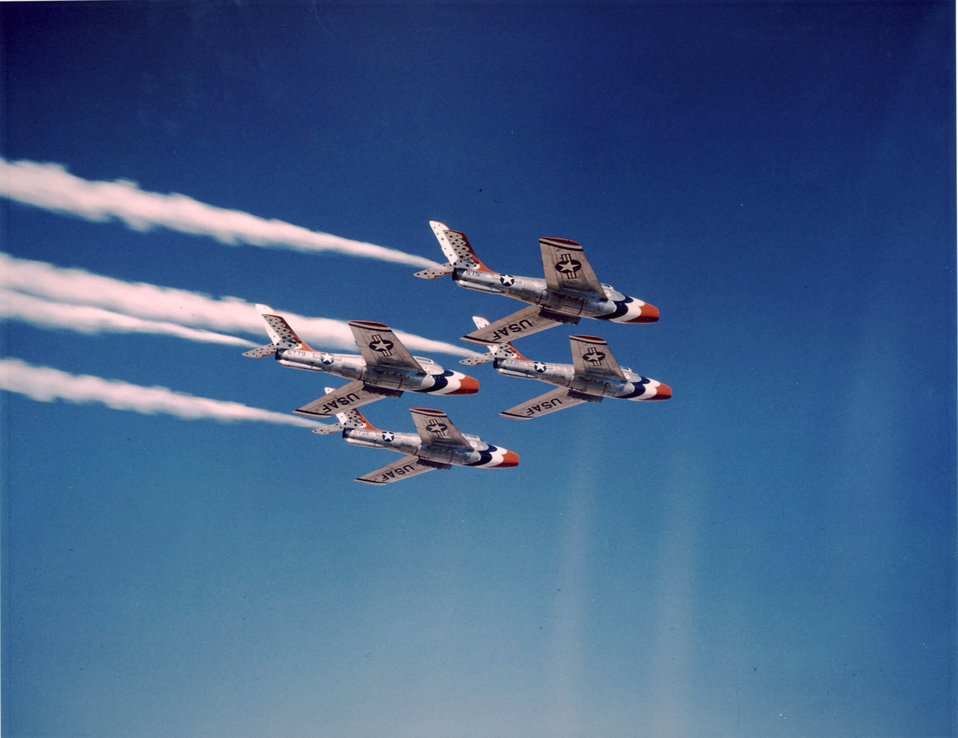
F-84F, Thunderbirds

1950s -- F-84F Thunderstreak, modified to include smoke tanks and red, white and blue drag chutes.